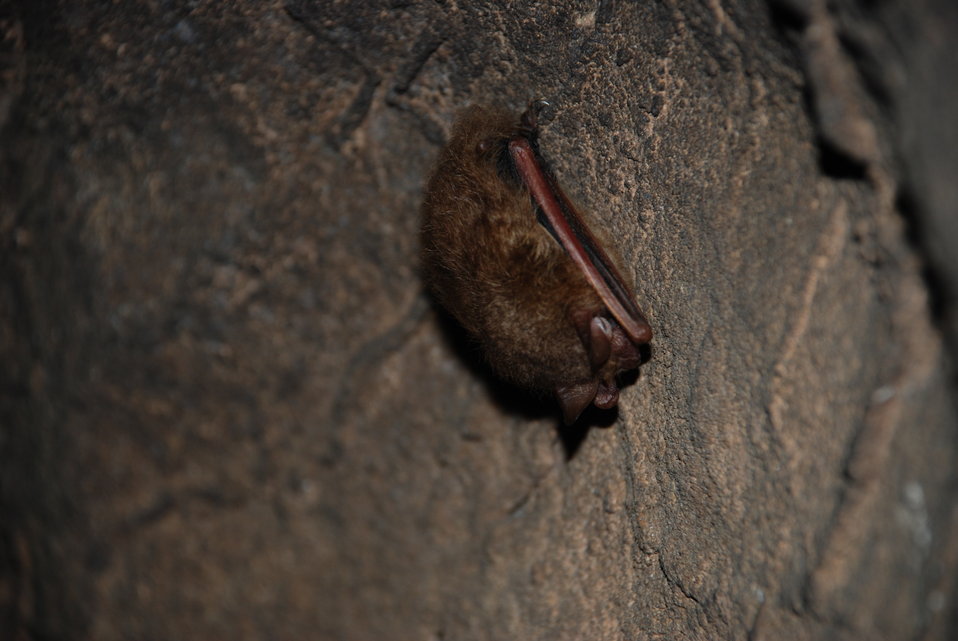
Eastern pipstrelle bat

Photo of Eastern pipistrelle bat observed in Madison Saltpeter Cave.